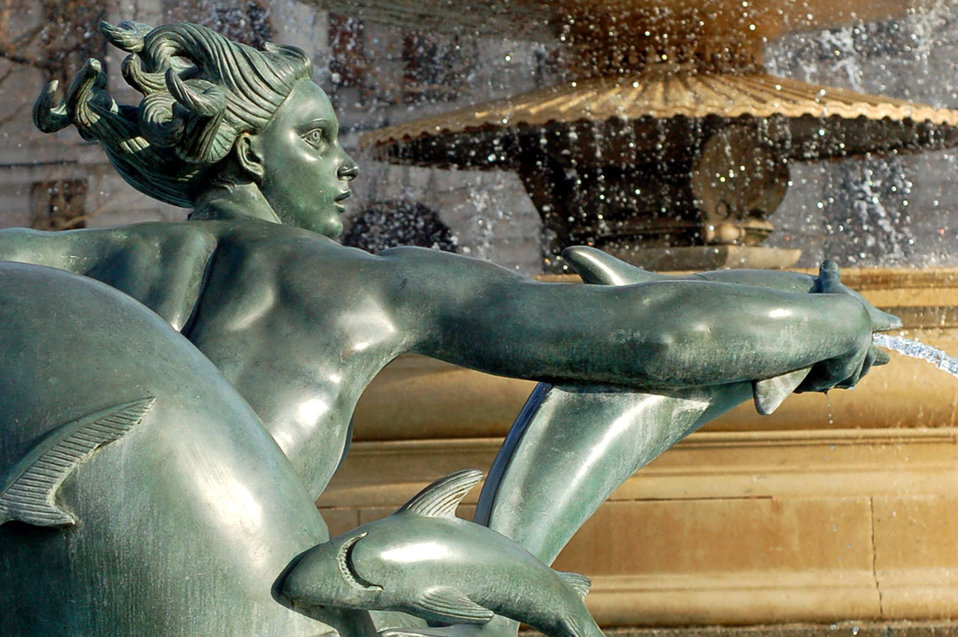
Fountain in london.